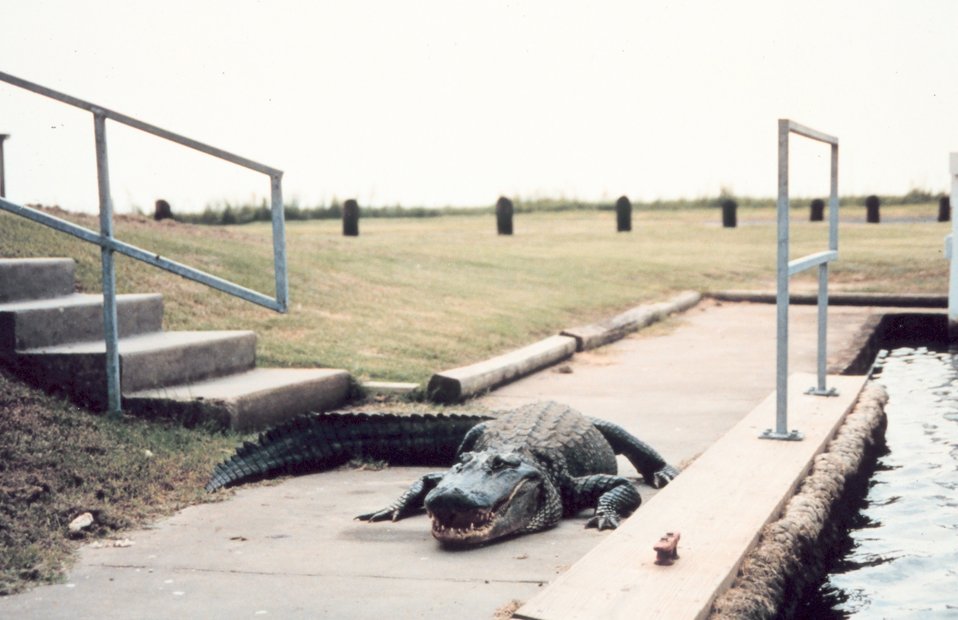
I wish folks would keep their pets on leashes! A very large alligator causes the average pedestrian to consider a detour.